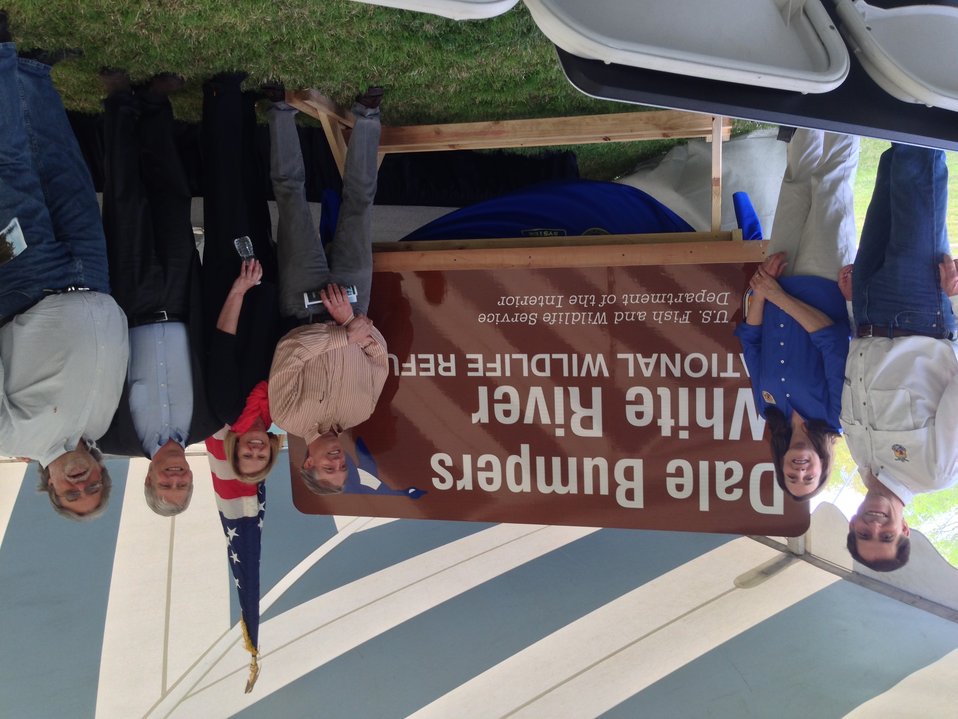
Dan Ashe, Cindy Dohner, and the Bumpers family

At the White River National Wildlife Refuge renaming ceremony in honor of Senator Dale Bumpers.
Credit: USFWS.
www.fws.gov/refuge/white river/